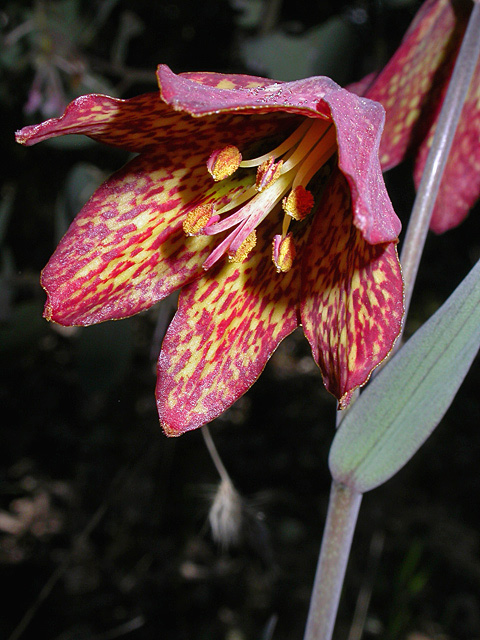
Gentner's Fritillary blossom

Plant description:

Fritillaria gentneri is a perennial herb arising from a fleshy bulb, with one to twelve deep red to maroon bell-shaped flowers produced on a single, erect, 40 to 70 centimeter tall flowering stalk. The leaves of reproductive plants occur in whorls along the stalk, while vegetative plants produce a single basal leaf varying in length from 0.5 to 29 centimeters. Most reproduction occurs through asexual production of small 'rice grain' bulblets on the surface of mature bulbs – these detach from the mother bulb and develop into new individuals. In general, the majority of the plants in a population are vegetative (rather than flowering), with numerous basal leaves (each representing one individual bulblet) massed near each flowering stalk.

Distinguishing characteristics:

Individuals of this species can be distinguished from similar congeners by comparing the nectary gland length/tepal length ratio and the extent of style branching. The nectaries of F. gentneri generally extend ¼ to ½ the length of the tepals, while those of F. recurva extend ¼ or less, and the long glands of F. affinis extend ½ or more of the tepal length. The style of F. affinis is divided for ½ of its length or more, with widely spreading branches, while only the tip (¼ or less) of F. recurva’s style is divided, with erect branches. The style of F. gentneri is intermediate between the two, with somewhat spreading branches extending slightly less than ½ the length of the style. These two characters, when evaluated in combination with flower color (scarlet in F. recurva, maroon in F. gentneri, and purplish-brown in F. affinis ), adequately differentiate these three species.

History:

This unusual fritillary was first noticed in a flower arrangement by Jacksonville, Oregon, resident Katherine Gentner in the early 1940’s. Katherine’s father, an entomologist at the Southern Oregon Experiment Station, recognized the uniqueness of this beautiful wildflower, and sent a specimen to his friend and associate, Oregon State University botanist Helen Gilkey. Dr. Gilkey subsequently published the description of this new species in the scientific journal Madroño, naming the plant after the Gentner family. Jacksonville’s continuing fondness for Gentner’s fritillary is exemplified by the city’s annual Fritillary Festival, held in late March and early April.